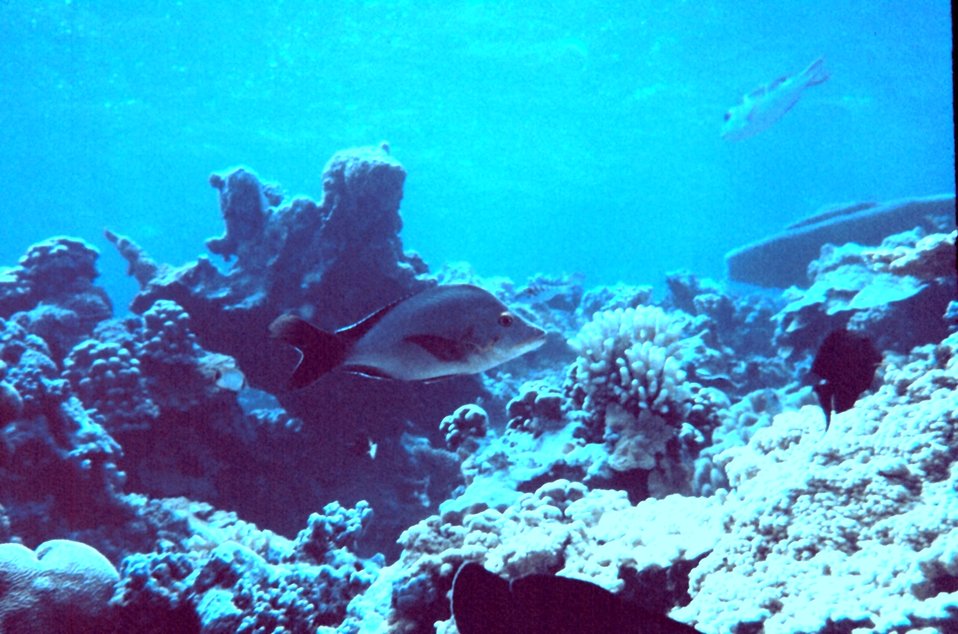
Humpback snapper (Lutjanus gibbus)